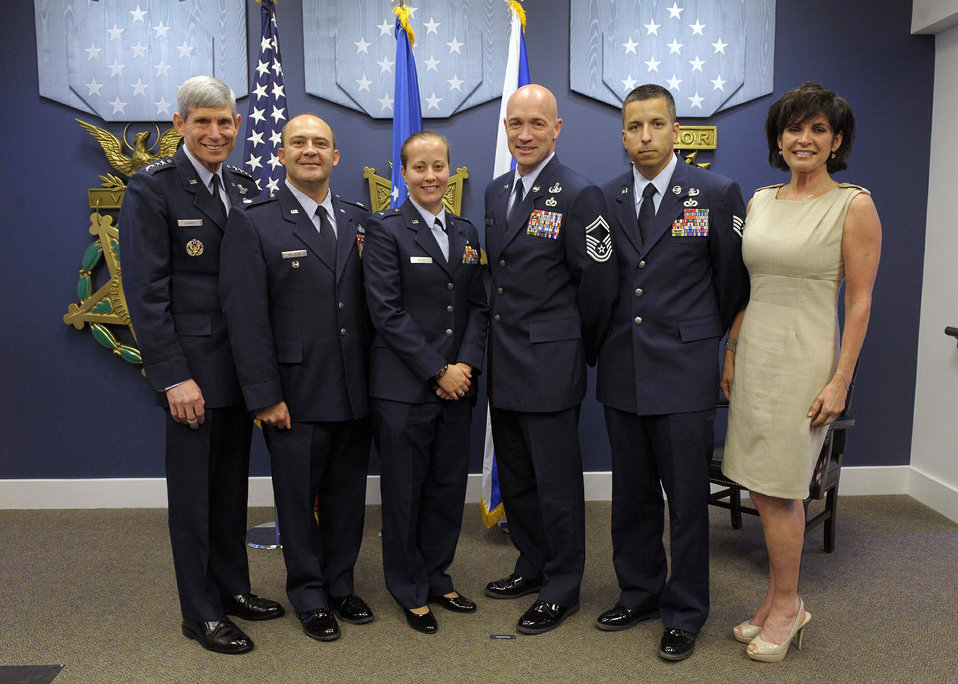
Air Force honors 2010 Sijan award winners

Air Force Chief of Staff Gen. Norton Schwartz and Janine Sijan Rozina flank this year's recipients of the 2010 Lance P. Sijan USAF Leadership Award during a ceremony May 11, 2011, in the Pentagon's Hall of Heroes. The recipients are (starting second from left) Lt. Col. Tony Millican, 1st Lt. Kathryn Miles, Senior Master Sgt. Brett Rogers and Staff Sgt. Michael Pereira. Ms. Rozina is the younger sister of the award's namesake. The Sijan Award was created in 1981 to recognize individuals who demonstrate the highest qualities of leadership both in and out of uniform.